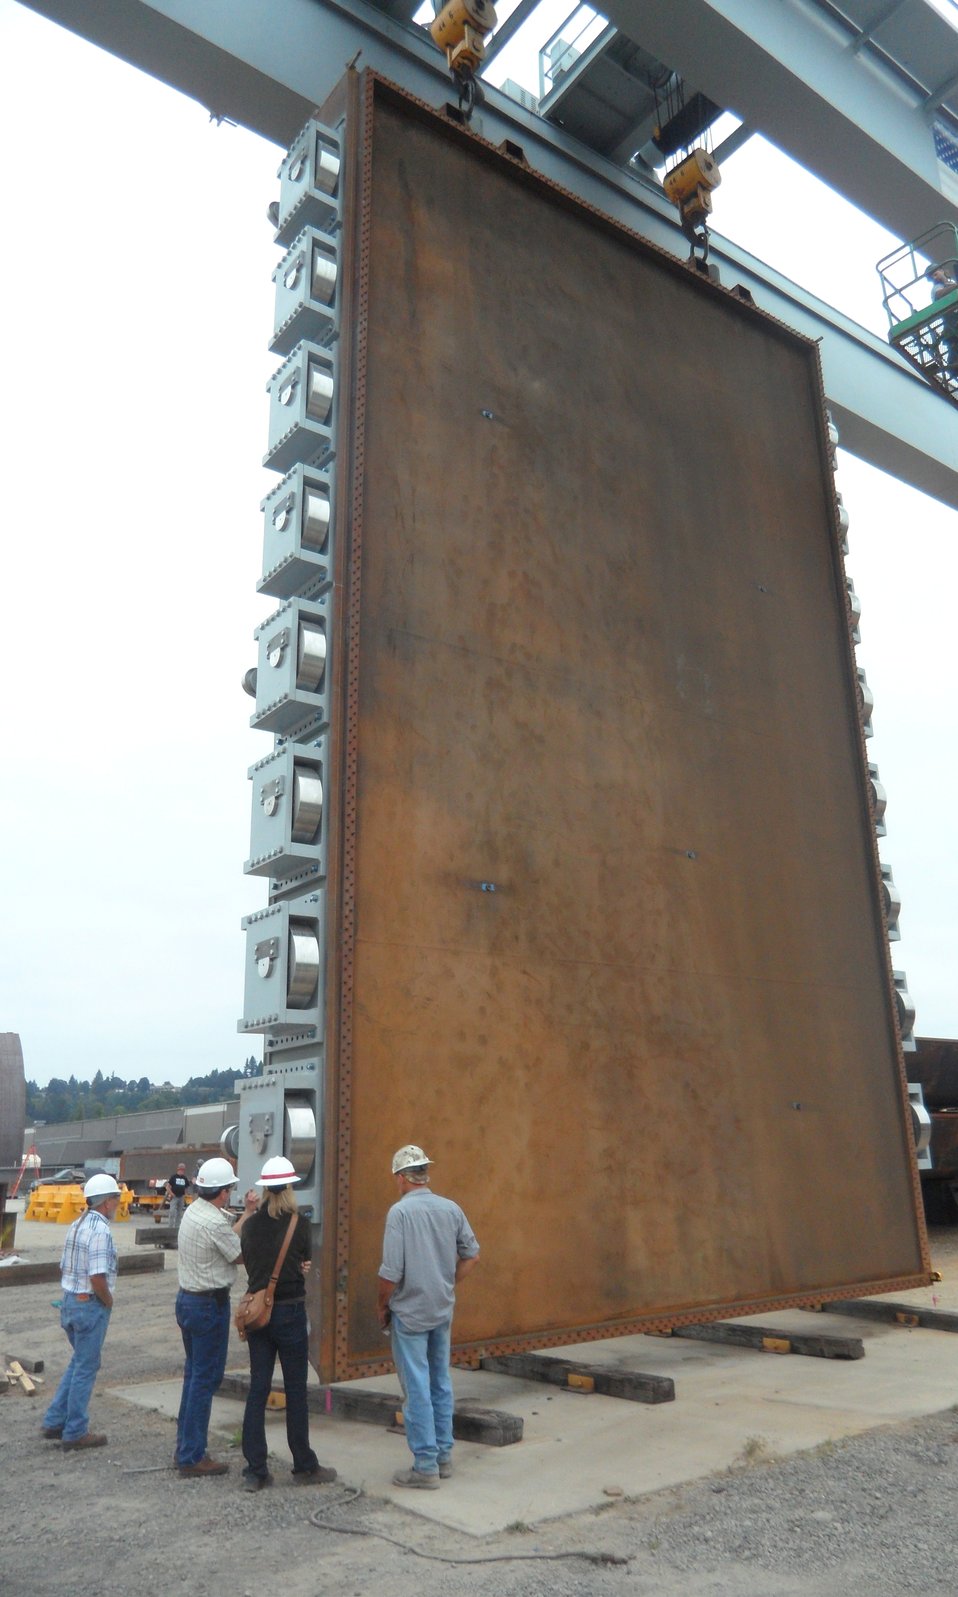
Giant Folsom spillway gates nearly ready for 600-mile journey to dam

Jackie Steiner, lead quality assurance inspector for the U.S. Army Corps of Engineers Sacramento District, examines an assembled bulkhead gate with representatives from Oregon Iron Works during a hang test at their facility in Vancouver, Wash. The gates will be trucked more than 600 miles to Folsom Dam, where they will be installed on a new auxiliary spillway in 2014.